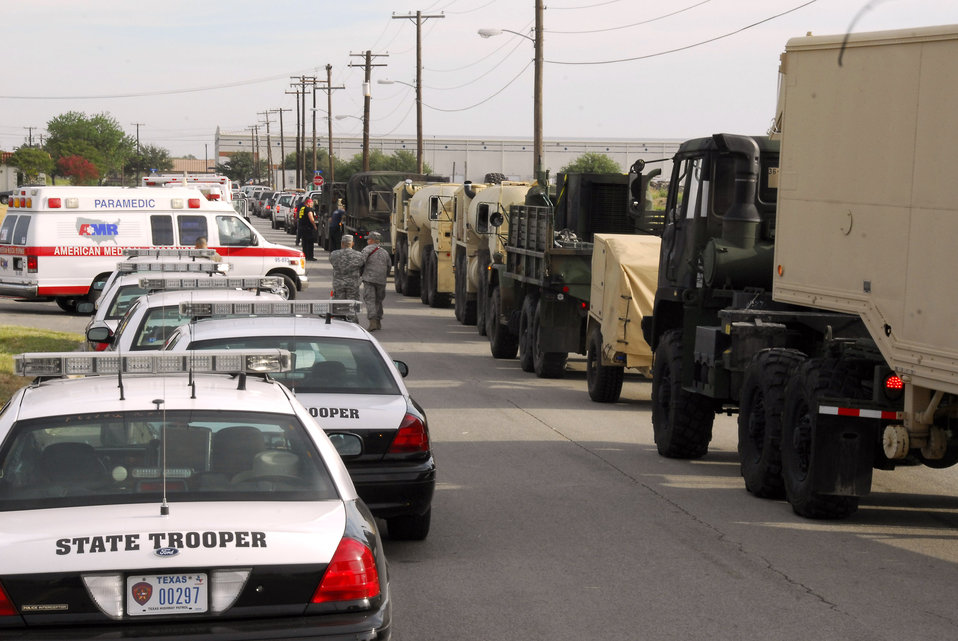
Convoy: Help is on the way!

Military forces and representatives of agencies from throughout Texas and the U.S. gathered in San Antonio and then convoyed east. More than 500 vehicles and 1,000 people headed to various locations in Southeast Texas to begin search and rescue and recovery efforts in the aftermath of Hurricane Ike.